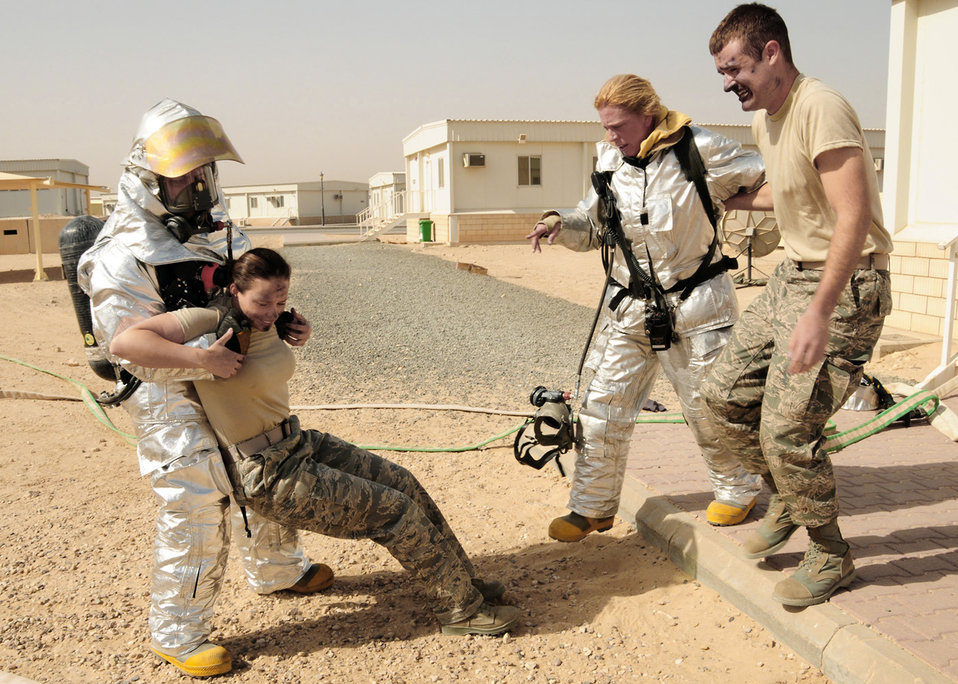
386th AEW conducts dorm fire exercise

Firefighters from the 386th Expeditionary Civil Engineer Squadron assist simulated victims out of a simulated dorm fire during a June 22 exercise at an air base in Southwest Asia. If the victim is conscious and has the ability to walk they are assisted to the medical collection point, if they are unconscious or incapable of walking they are then carried.